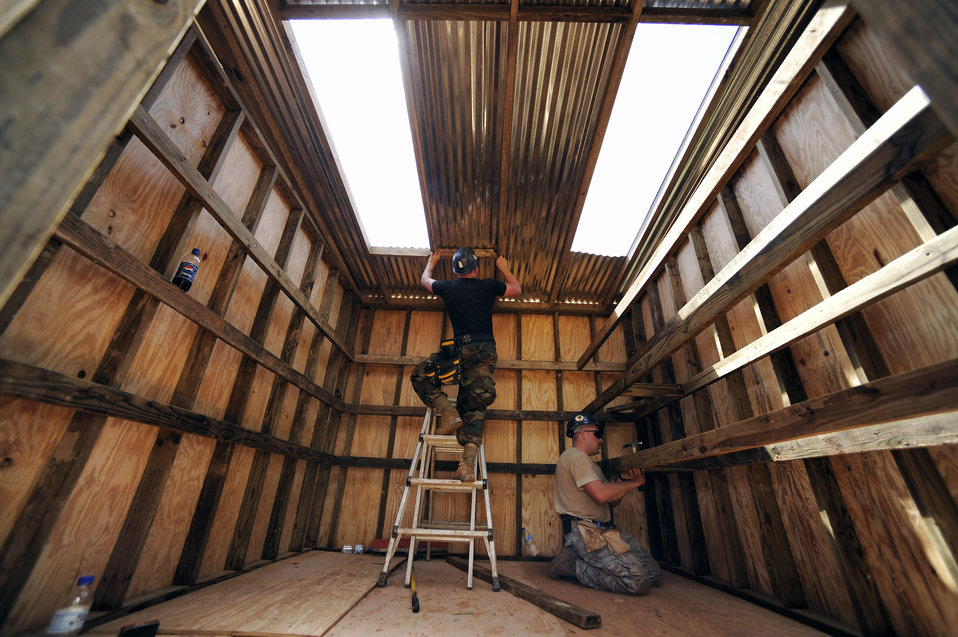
Can you hand me a nail?

Airman Daniel Pauls and Staff Sgt. Bruce Hills build a youth center in Tunapuna, Trinidad and Tobago, in support of Operation Continuing Promise 2008. The Airmen are with the Prime BEEF contingency group from Minot Air Force Base, N. D.